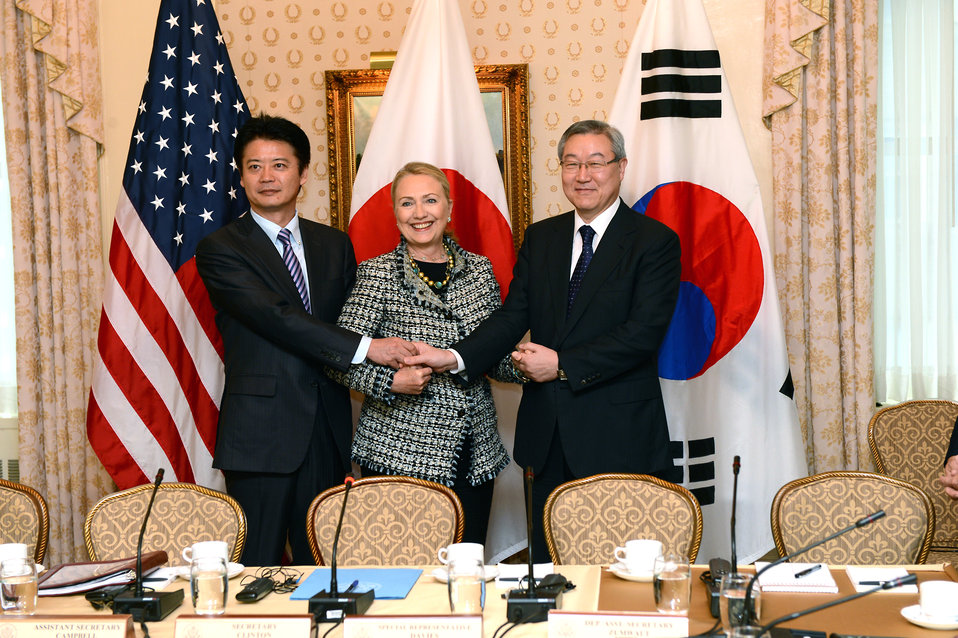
U.S., Japan, South Korea Trilateral Meeting During UN General Assembly

U.S. Secretary of State Hillary Rodham Clinton meets with Japanese Foreign Minister Koichiro Gemba and Korean Foreign Minister Kim Sung-hwan, at the Waldorf Astoria in New York City, September 28, 2012.